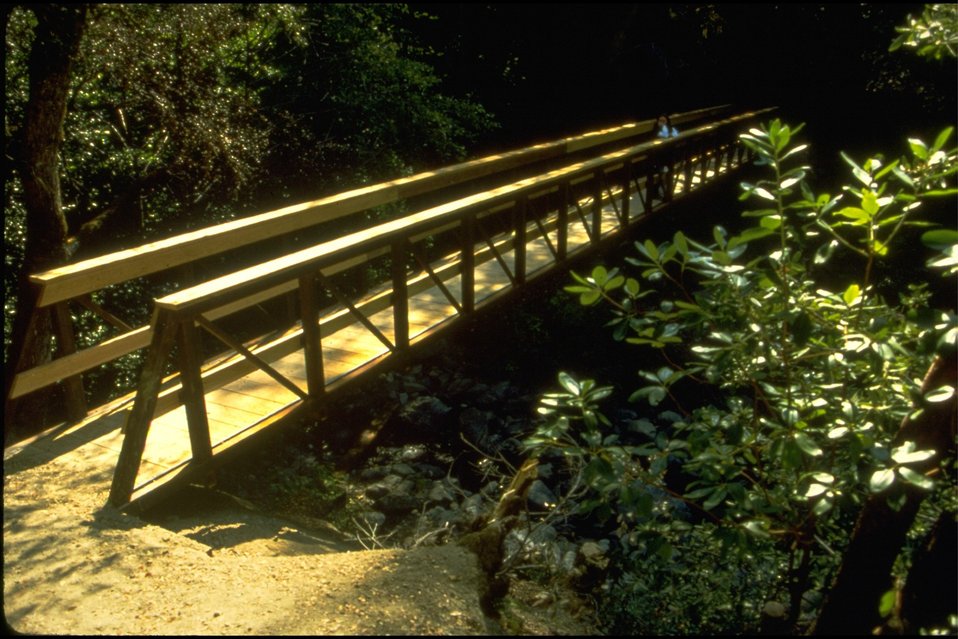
Rogue River - Whisky Creek. Bridge at Whisky Creek on Rogue River Trail, wild section.